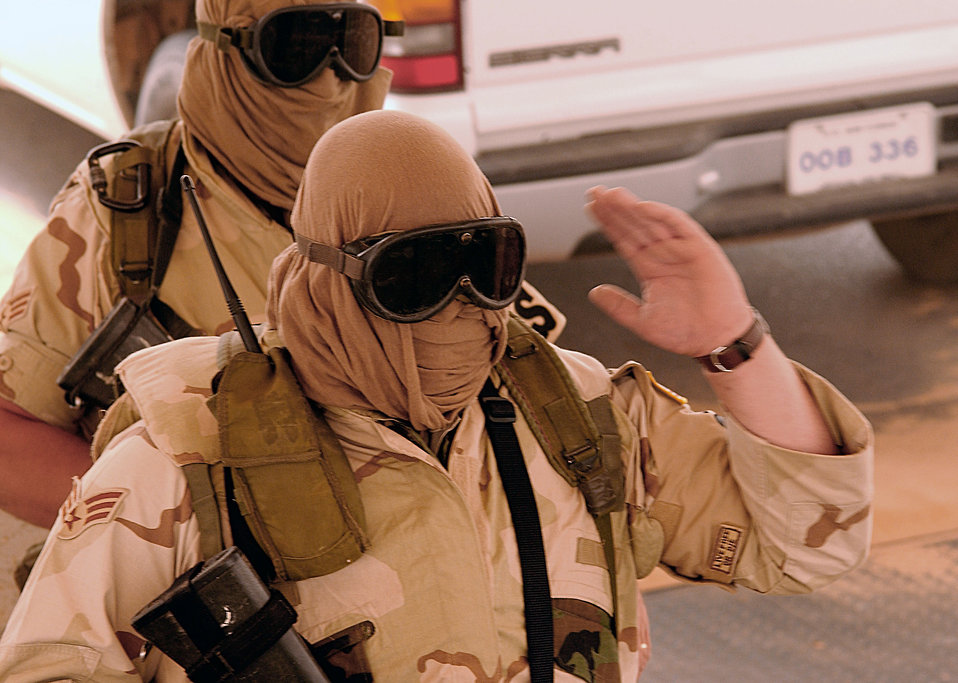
Pass through

OPERATION IRAQI FREEDOM -- Senior Airman Greg Pelletier and Senior Airman Phil Soares, both security forces journeyman deployed from the 157th Security Forces Squadron, Pease Air National Guard Station, N.H., to the 363rd Expeditionary Security Forces Squadron, authorize a vehicle to proceed through an entry control point during a sand storm on April 7.